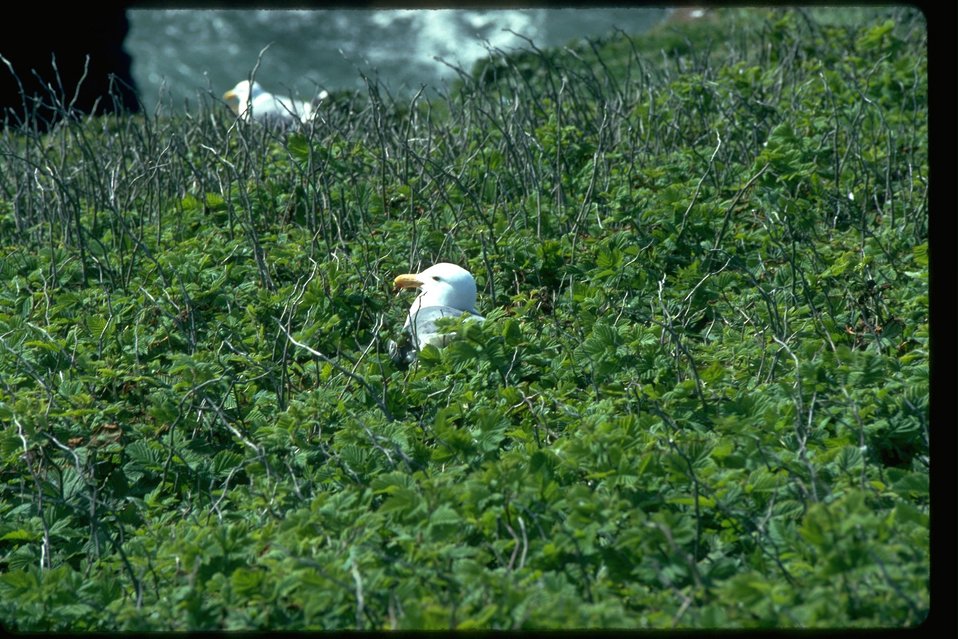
Gulls sitting in some plants.